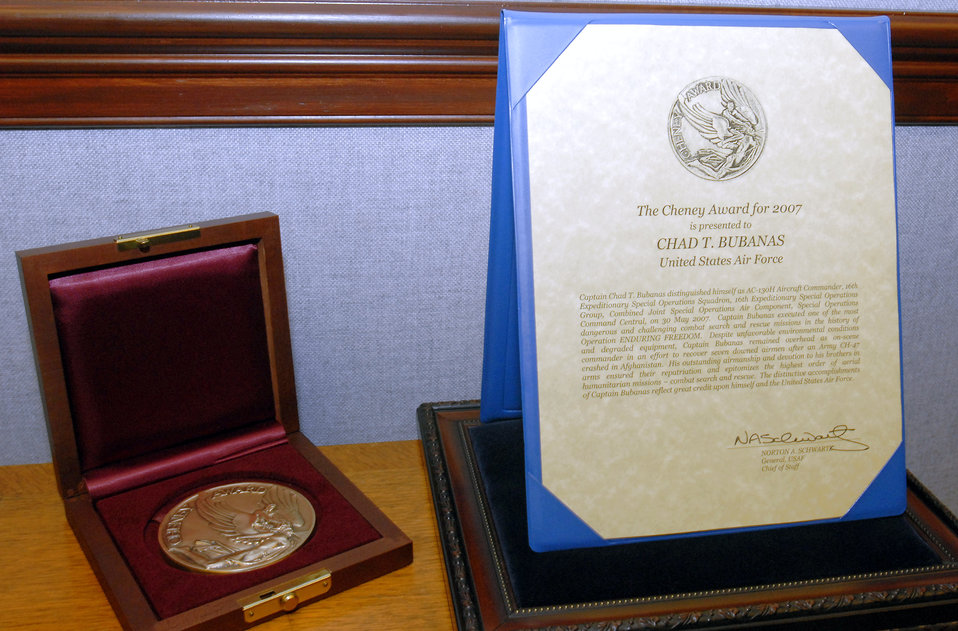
Gunship commander receives Cheney Award

Capt. Chad Bubanas was named the recipient of the Cheney Award in a ceremony Oct. 6 at the Pentagon. Captain Bubanas received the award for his actions as the aircraft commander of an AC-130H Spectre gunship providing close-air support to troops on the ground in Afghanistan in May 2007. The Cheney Award is presented each year to aviators who demonstrate an act of valor, extreme fortitude or self-sacrifice in a humanitarian venture. Captain Bubanas, an Aurora, Colo., native, is assigned to the 18th Flight Test Squadron, Hurlburt Field, Fla.